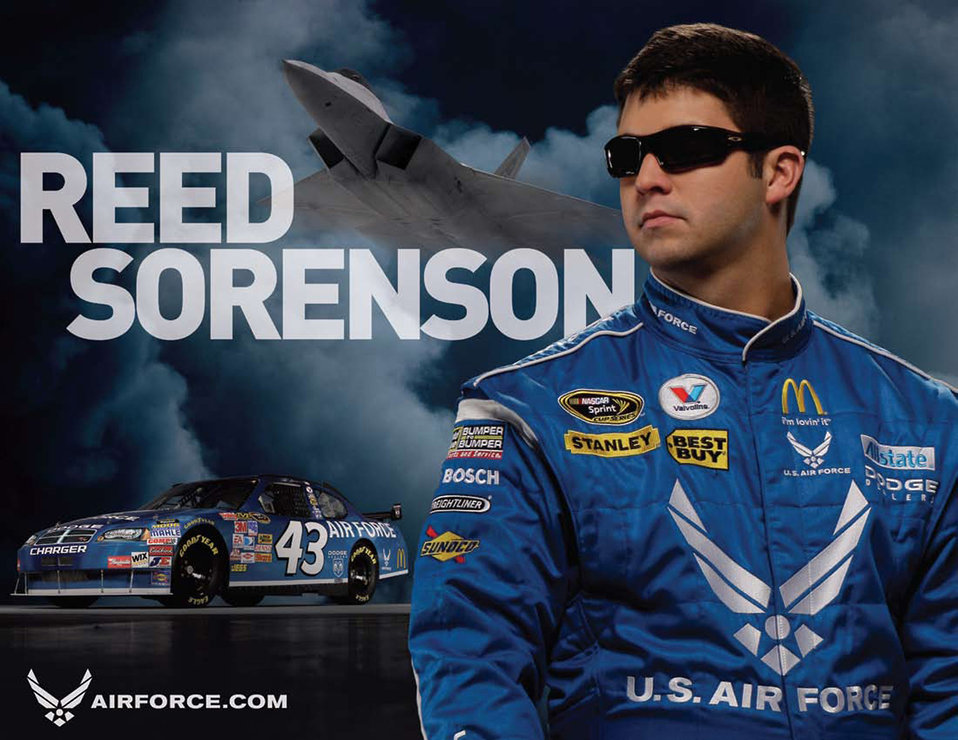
Switching Seats campaign going strong

Air Force officials announced in November 2008 both a primary and associate sponsorship with Richard Petty Motorsports for the No. 43 car driven by Reed Sorenson, a three-time winner in the Nationwide Series.